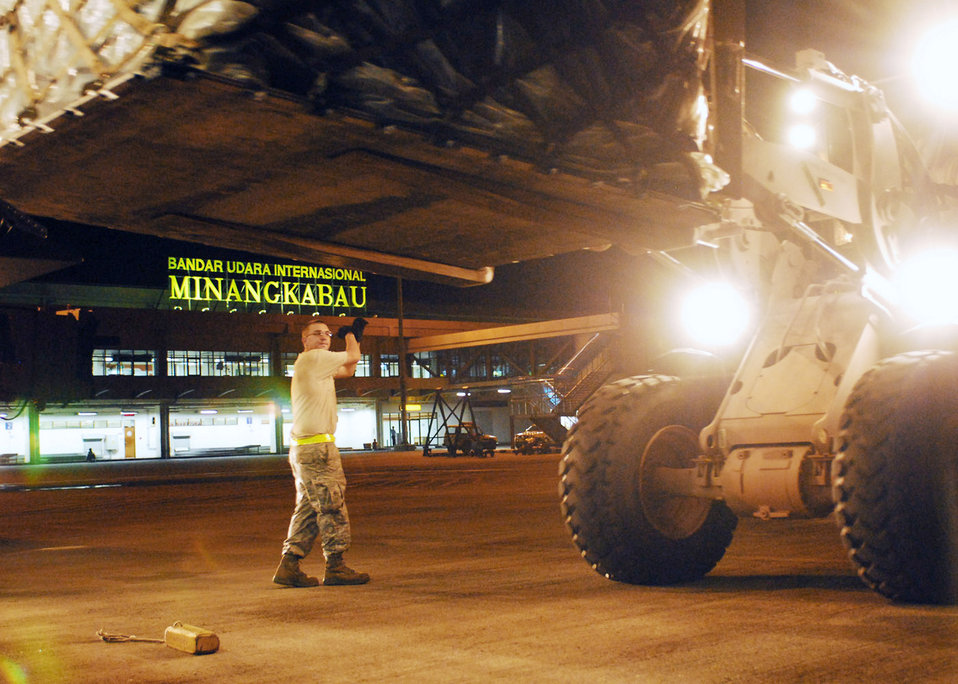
HARRT arrives in Indonesia

Staff Sgt. Christopher West marshals a forklift carrying medical supplies off of a C-17 Globemaster III Oct. 5, 2009, at Padang, Indonesia. Sergeant West is an air transportation specialist with the 36th Mobility Response Squadron from Andersen Air Force Base, Guam, and is deployed here with the an Air Force humanitarian assistance rapid response team to provide medical assistance for those affected by the recent earthquake.